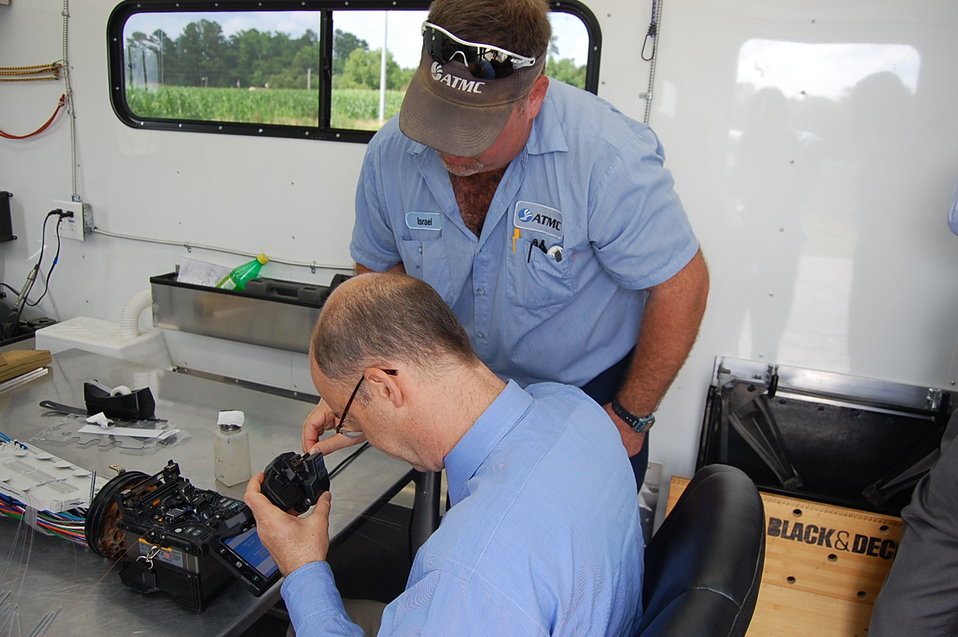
U.S. Department of Agriculture (USDA) Rural Development Rural Utilities Administrator Jonathan Adelstein (seated) receives lesson in fiber splicing at the Atlantic Telephone Membership Corporation (ATMC) in Brunswick County, North Carolina on June 13, 2012. USDA and ATMC are partners in providing high-speed broadband service to rural southeastern North Carolina. ATMC is a nonprofit cooperative that provides telephone service; high speed internet, cable TV, wireless, business communications, and security.